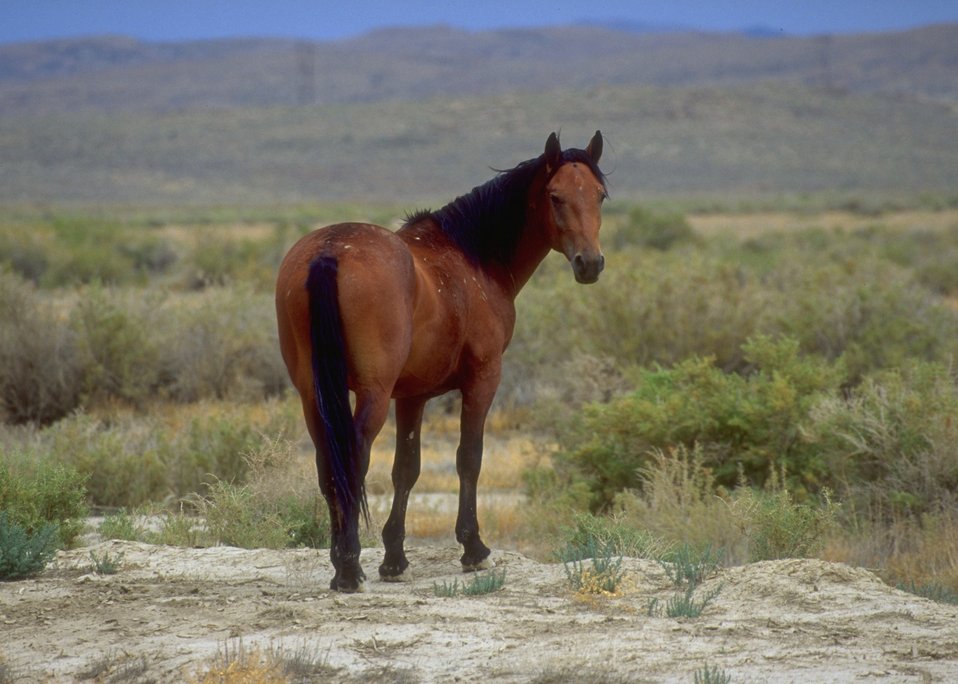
Wild horses, Rock Springs Field Office.